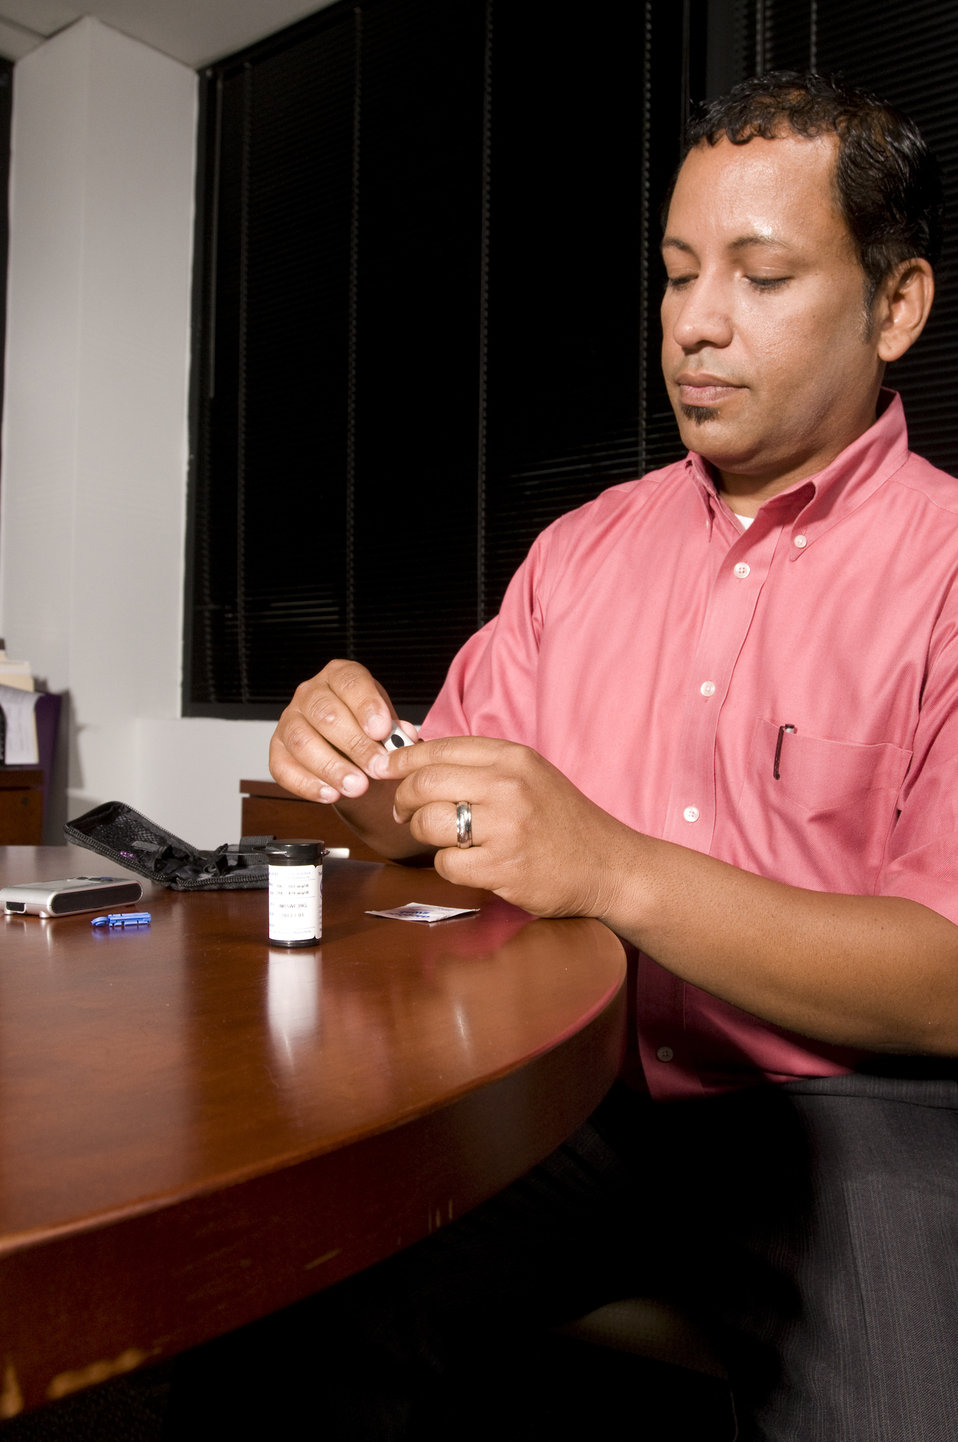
The man pictured here, was about to check his blood glucose level. This process is known as self-monitoring blood glucose, and it's a way for people with diabetes to find out how much glucose is in their blood. A drop of blood from the fingertip is placed on a special coated strip of paper that 'reads' the amount of glucose in the blood. Many people use an electronic meter to get this reading. At this point, he was about to perform a controlled finger stick using a mechanized needle, which would very quickly, and relatively painlessly, penetrate the skin, thereby, inducing the delivery of a blood droplet, which could then be tested.